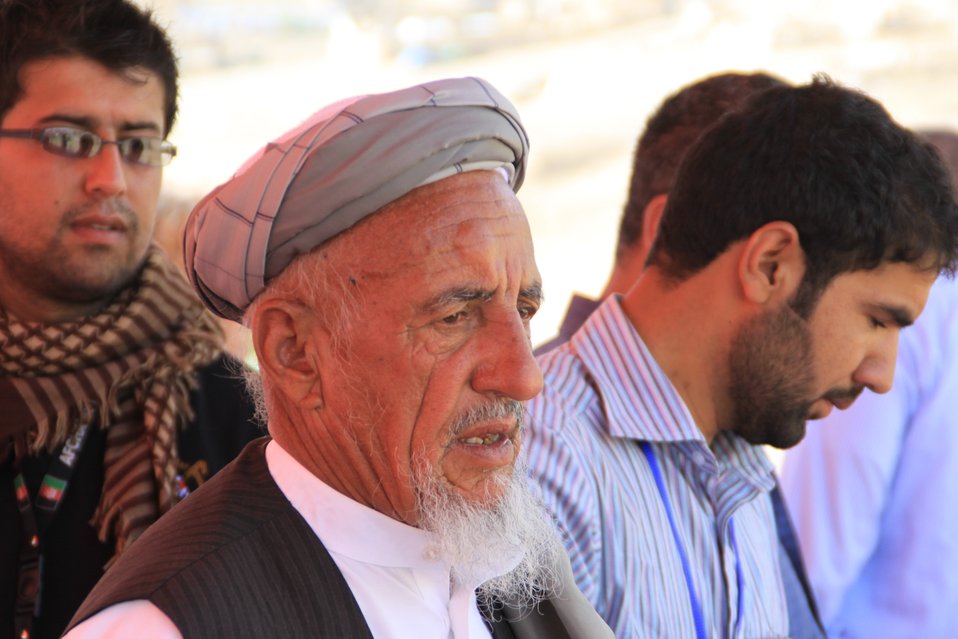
Badam Bagh Farm